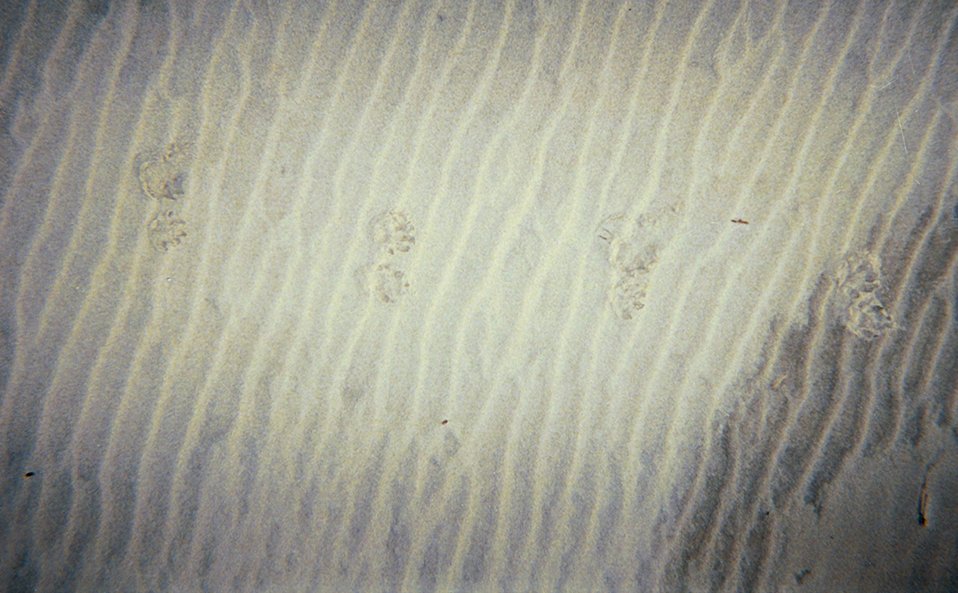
Wind ripples and paw prints on the dunes.